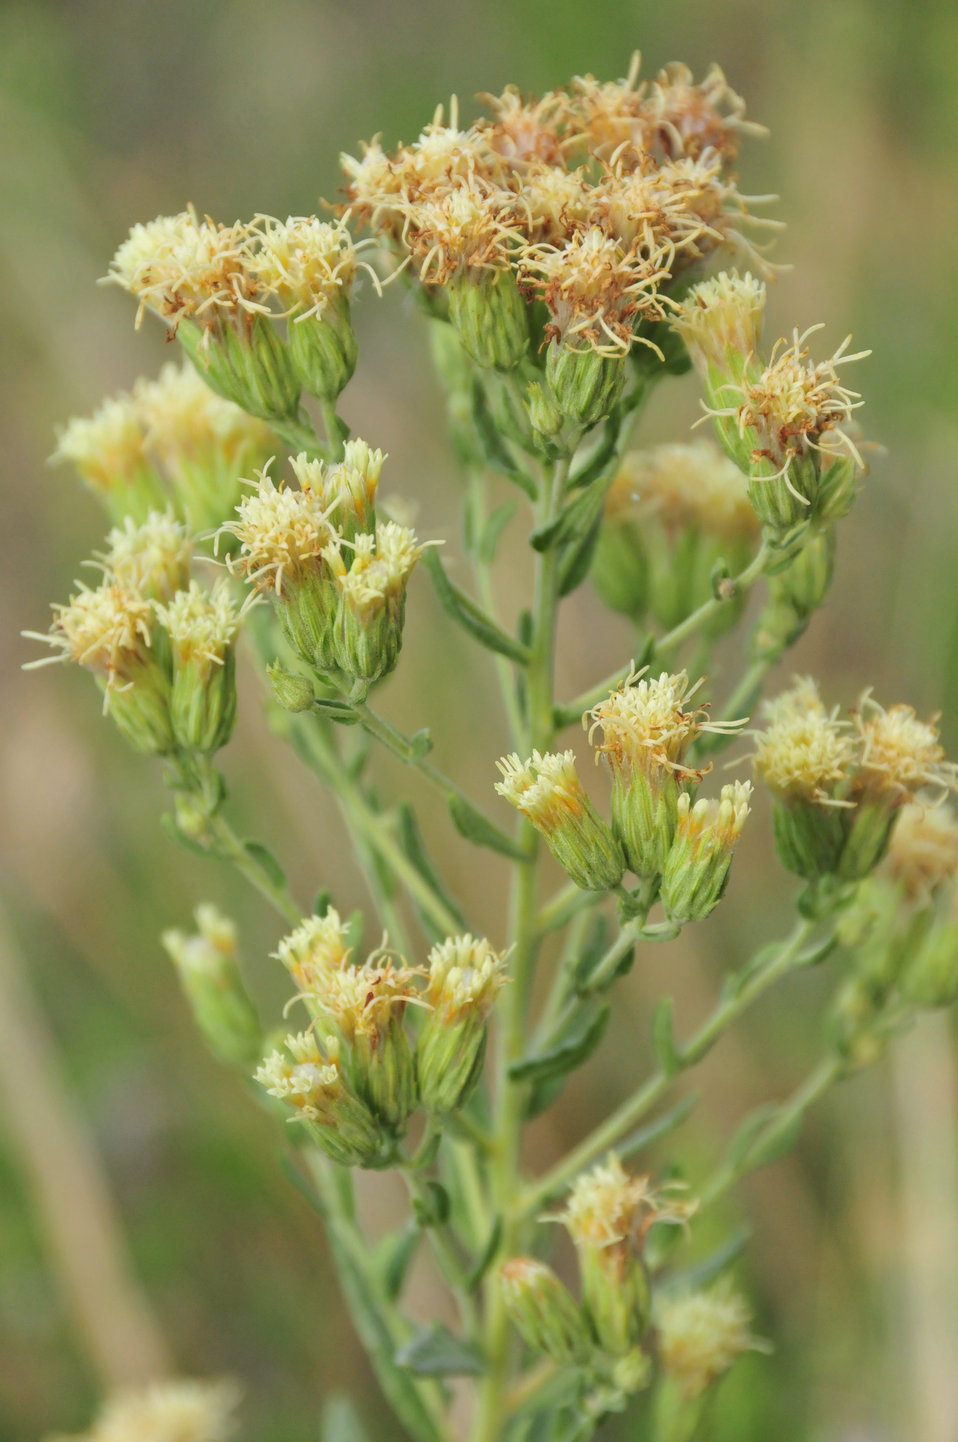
False Boneset (Kuhnia eupatorioides) on mixed grass prairie of Lacreek NWR 2

False Boneset (Kuhnia eupatorioides) in flower on Mixed Grass Prairie of Lacreek NWR. Not all wildflowers have showy colors. In this case, false bonset produces cream to ivory colored flowers. False boneset has one of the deepest root systems on the prairies, reaching over 17 feet into the soil. During severe droughts, it may be one of the only forbs to produce flowers.